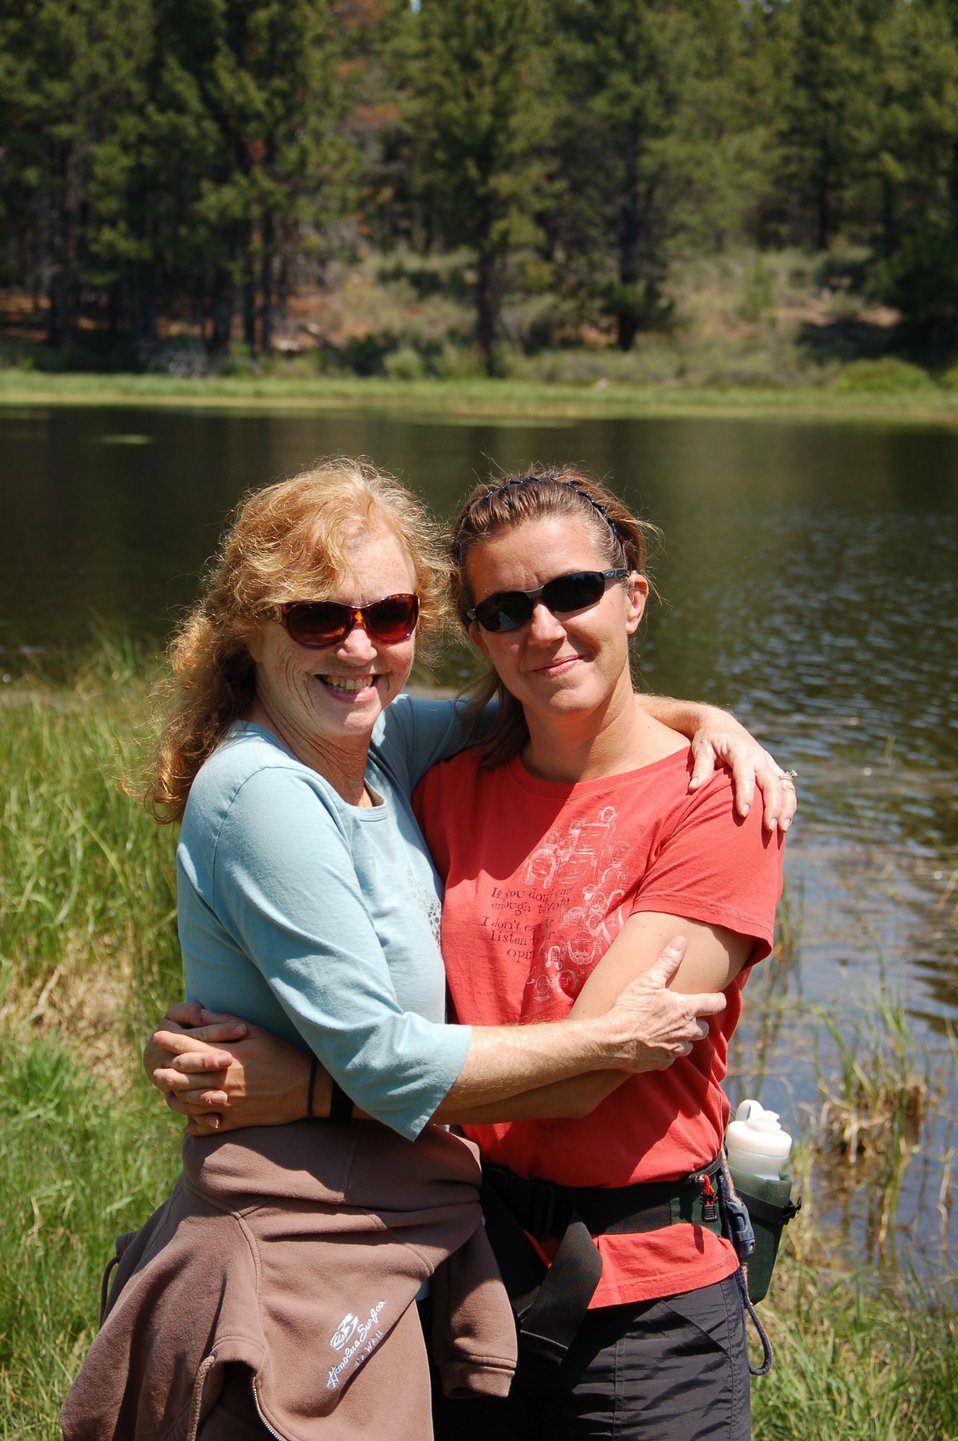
Erin Holmes and Mom